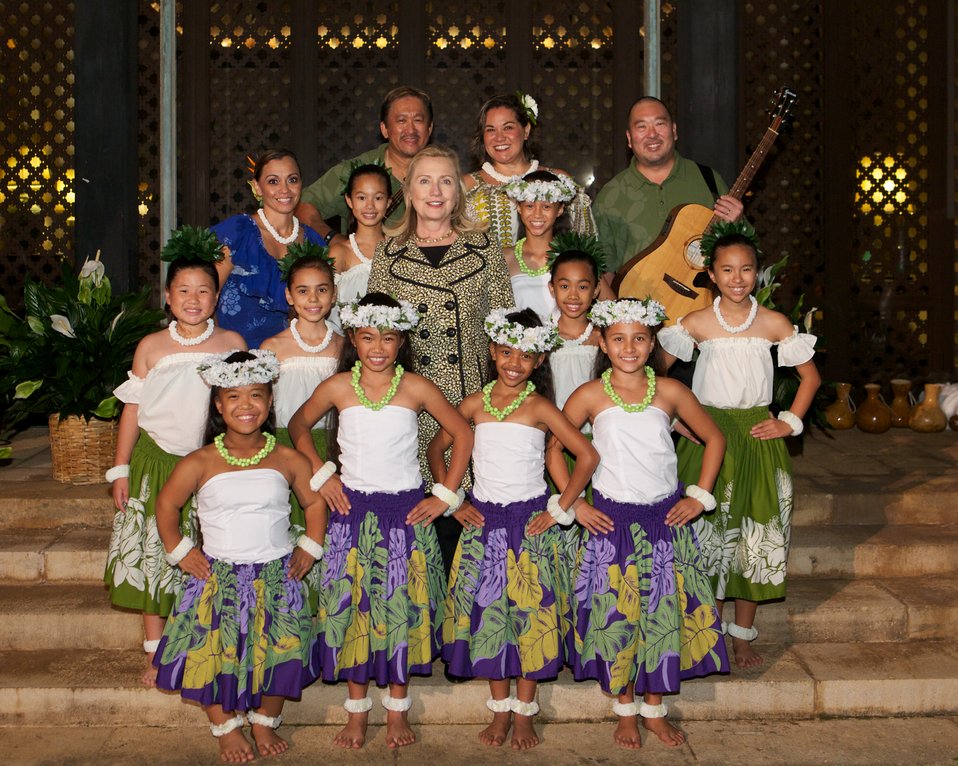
Secretary Clinton Poses with Hula Dancers

Secretary Clinton poses with a group of hula dancers who provided entertainment for the Foreign and Trade Ministers Dinner at Shangri-la in Honolulu, Hawaii, on November 10, 2011.